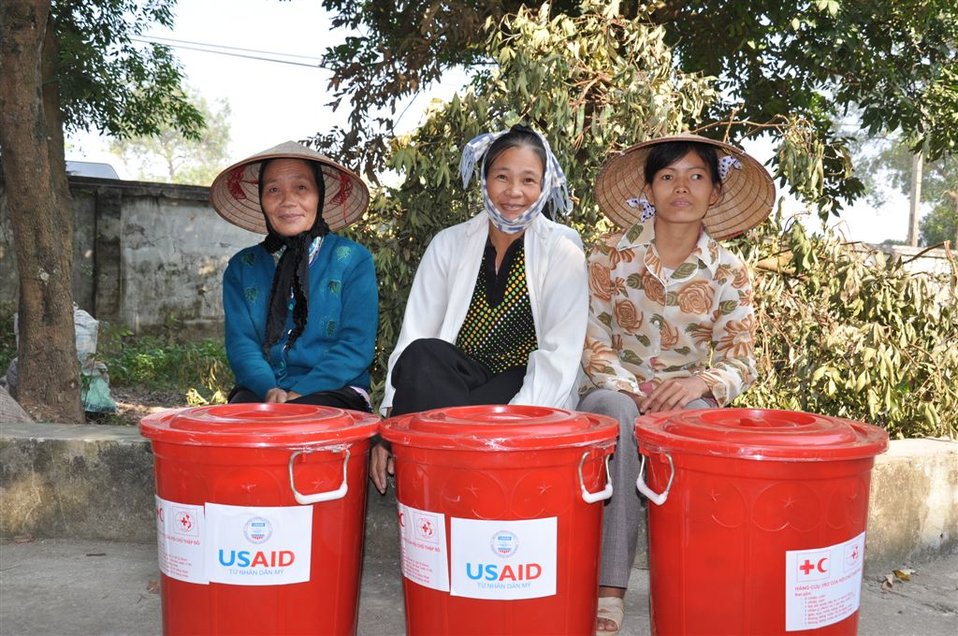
Residents near Hanoi receive disaster assistance from USAID and the Red Cross.